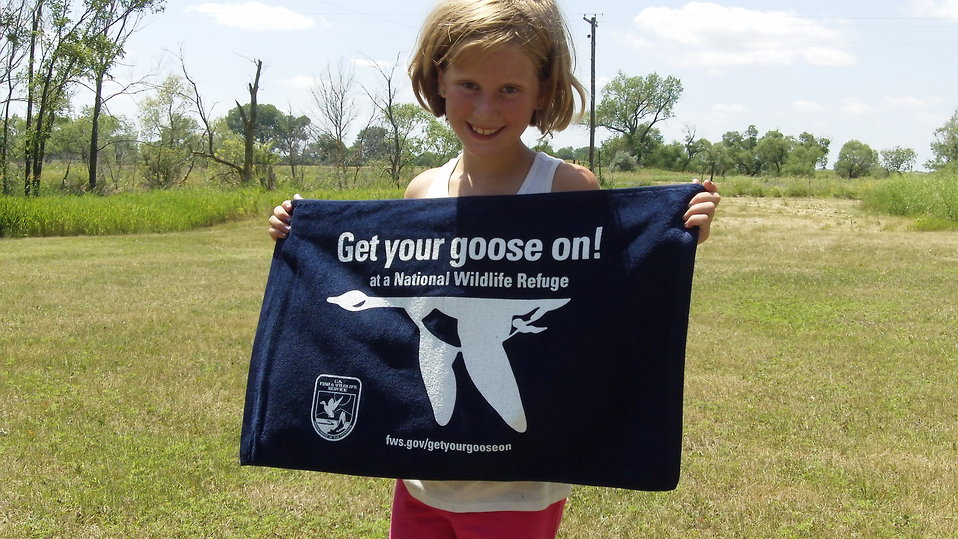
Get Your Goose On!

Photo taken at Huron Wetland Management District in east-central South Dakota.